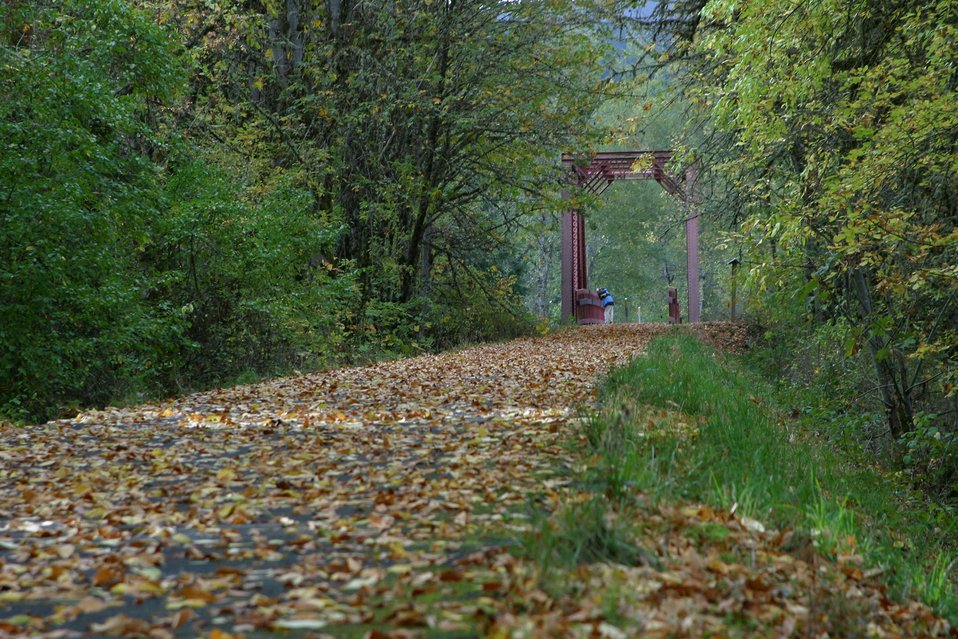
The the 15.6 mile Row River Trail trail not only attracts mountain bicyclists and horseback riders, but also road bicyclists and even a few in-line skaters.